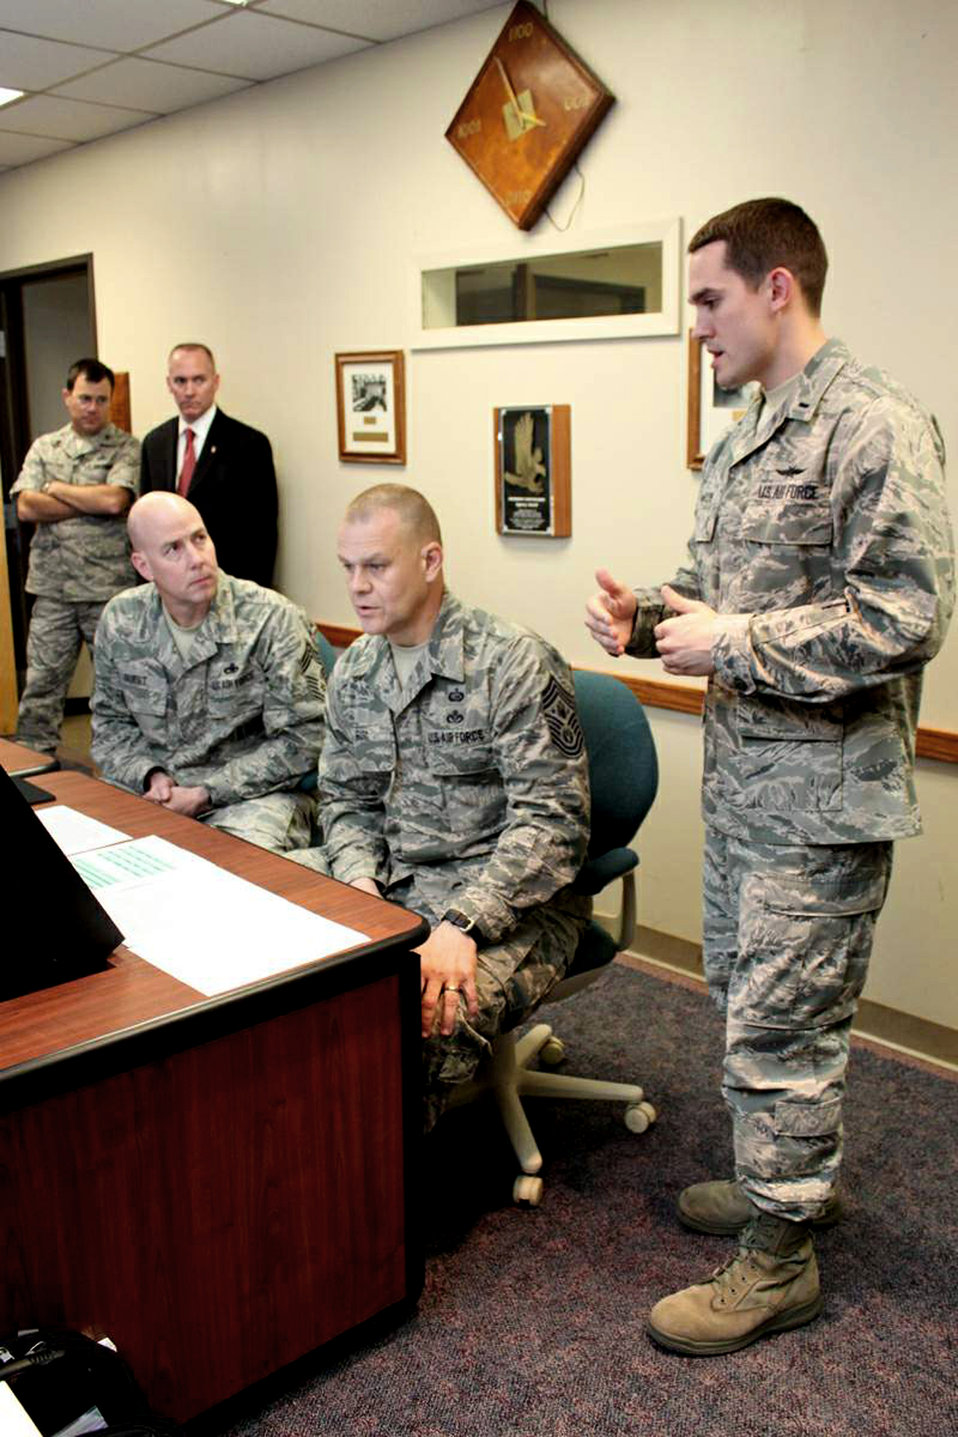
Enlisted development

1st Lt. Stephen Lawson explains the new enlisted development tool to Chief Master Sgt. of the Air Force James A. Roy and Chief Master Sgt. Ray Guest, the Air Force's nuclear weapons career field manager, March 31, 2011, at Randolph Air Force Base, Texas. Lawson is the Air Force Personnel Center's force development chief.